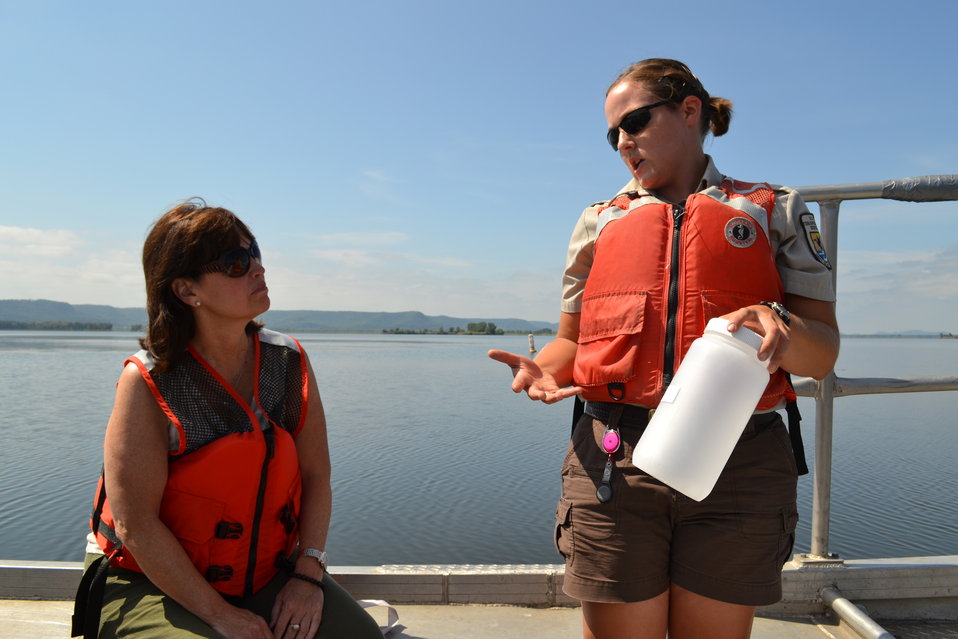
Water sampling for eDNA

Biological Sciences Technician, Jenna Merry, explains to Rep. Betty McCollum (D-Minn.) the process by which the U.S. Fish and Wildlife Service collects water samples to test for the presence of Asian carp eDNA.